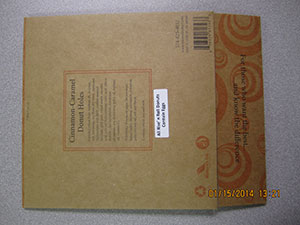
RECALLED – All Varieties of Donuts, Cinnamon Donut Holes, and Mixed Nut Candy

January 17, 2014 – Product Recall – Rise’N Roll Bakery Issues Allergy Alert on Undeclared Egg in All Their Donut Varieties and Undeclared Peanuts in Nutty Crunch.